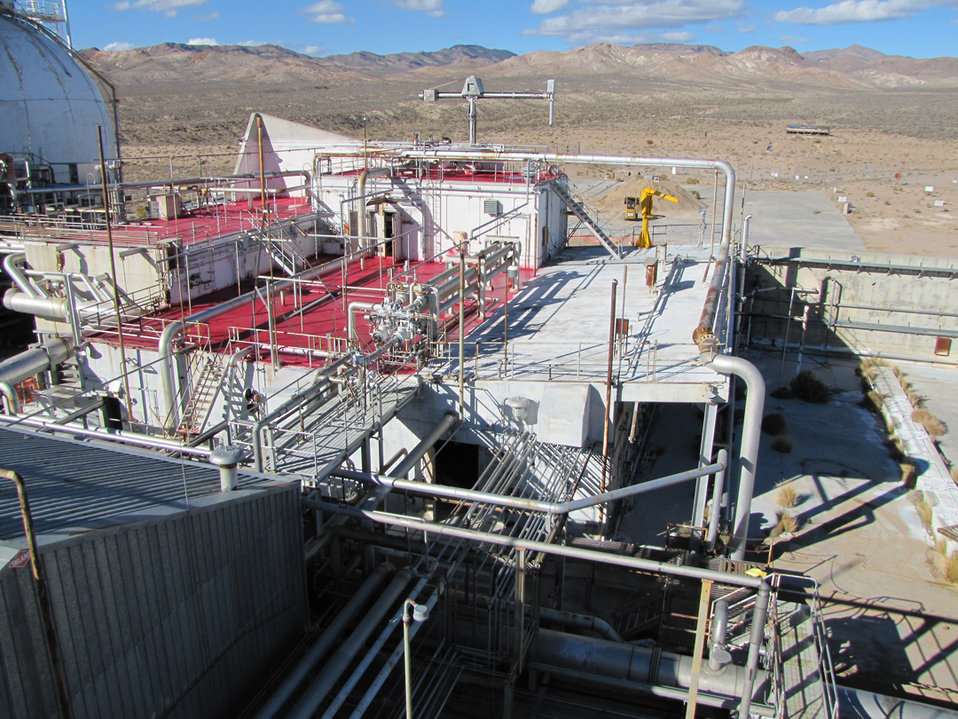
Nevada Demolition - Test Cell C 'Before' photo

Crews completed demolition activities at three contaminated facilities at the NNSS. Several structures were taken down at Test Cell C, while full demolition took place at the Pluto and Reactor Maintenance, Assembly, and Disassembly facilities. Removal of these facilities will ultimately save costs associated with long-term operations, maintenance and infrastructure. This photo shows the site of the Test Cell C facility before demolition of several structures.